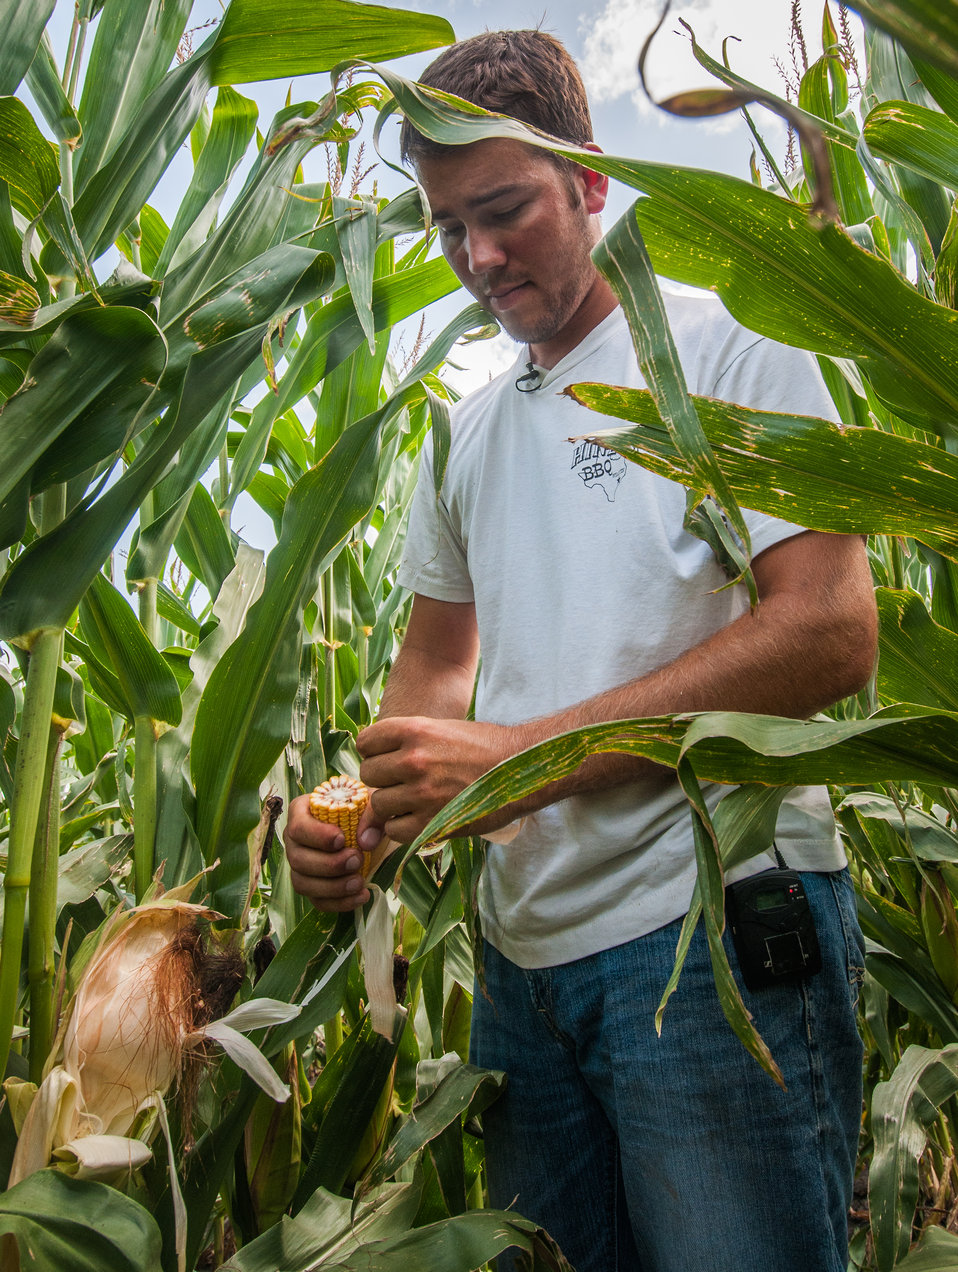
Philip Marek checks the health of a crop of #2 yellow corn at his father's farm and squeezes a kernel to roughly check if it has reached the 15% water content level needed for harvesting in Wharton County, TX on Jun. 20, 2013. Philip Marek has been a farm owner since 2010 and started with 210 acres. Marek and his cousin Josh Marek were able to use a U.S. Department of Agriculture (USDA) Farm Services Agency (FSA) small and new farmer and rancher loan programs provided them the ability to handle initial business start-up and equipment purchase.